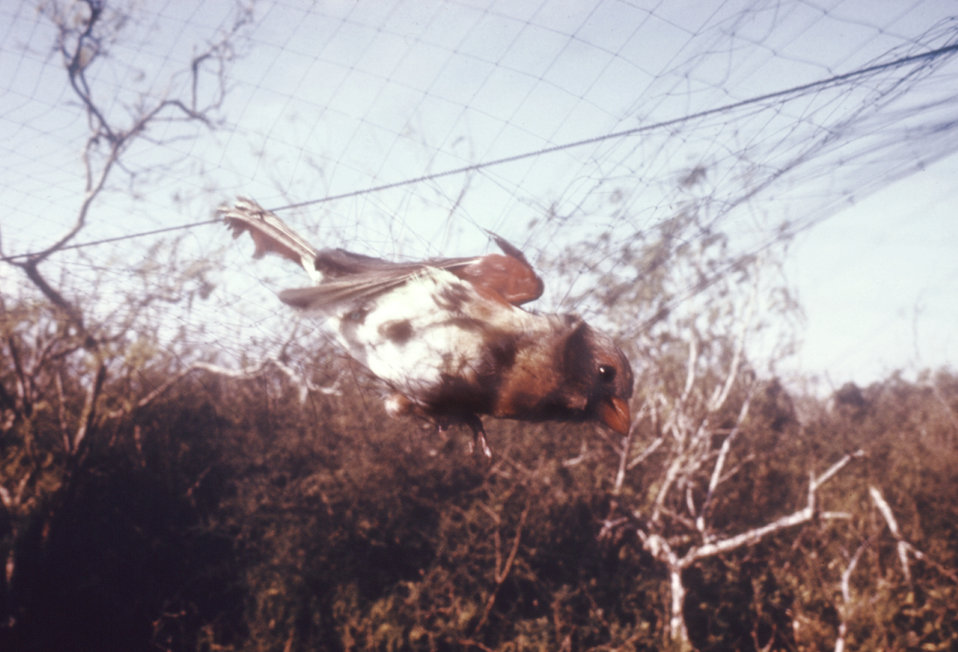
This bird was captured within a net trap in order to be tested during a 1974 arbovirus study.